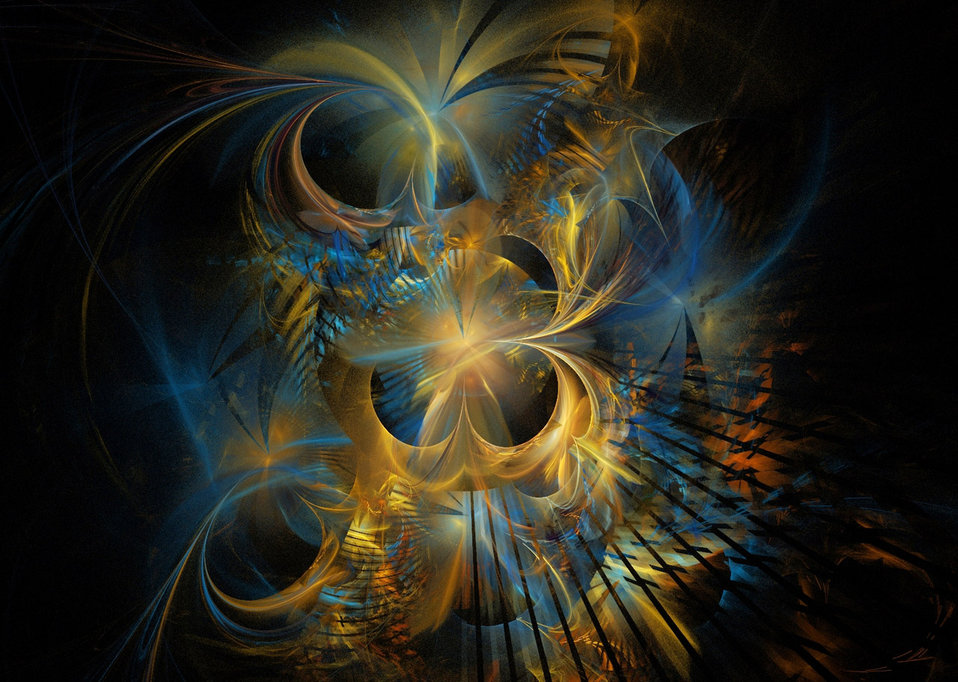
Beautiful fractal

Lovely colour combinations of blue and orange fractal.